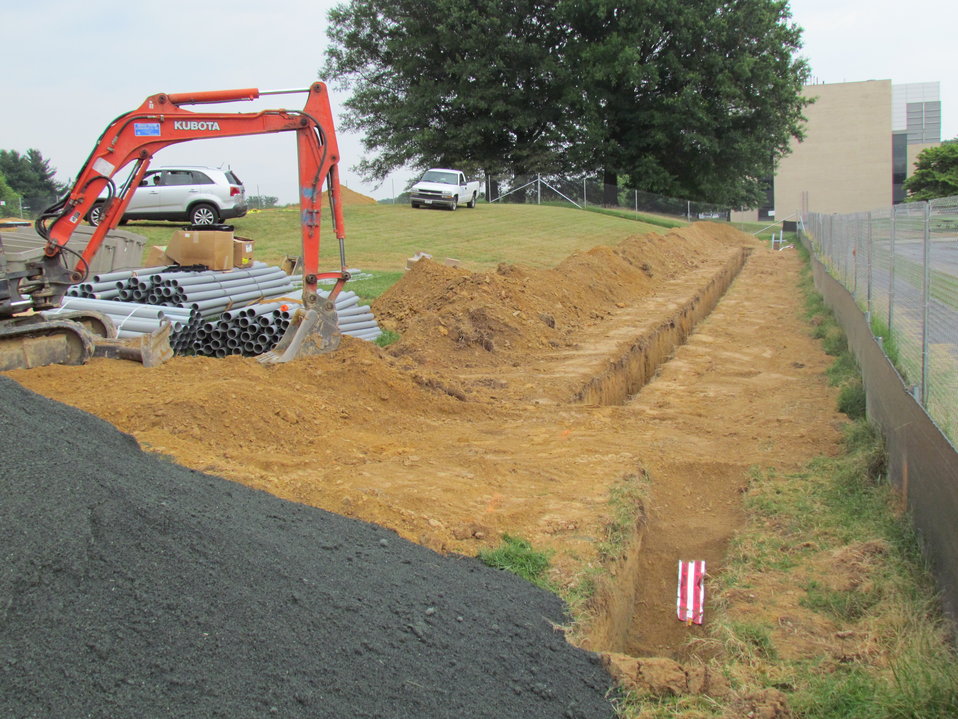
Net-Zero Energy Residential Test Facility - Trenching for utilities to supply electrical power, natural gas, and telecommunications to facility.